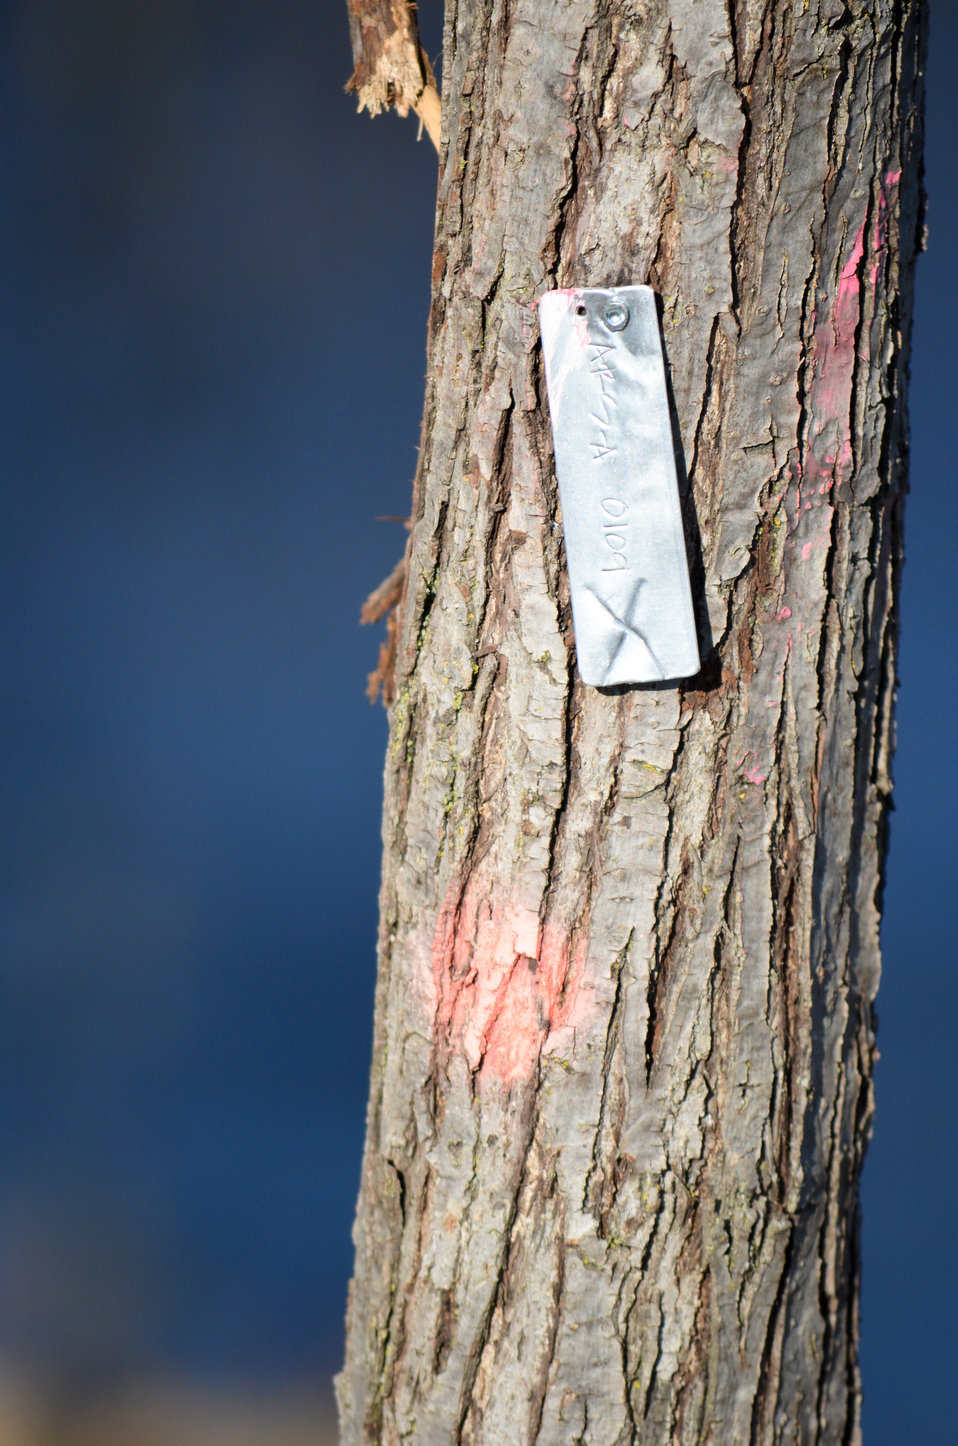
Tree marked during flood risk reduction survey

A survey marker, placed by the U.S. Army Corps of Engineers Sacramento District, designates an inventoried tree along the American River near Watt Avenue in Sacramento, Calif., Jan. 4, 2012. Trees identified in the survey were marked or tagged to signify that they were included in the inventory. GPS coordinates were recorded for each item identified, allowing engineers to eventually create virtual models of the levees. The study is part of the district’s American River Common Features project, a partnership with the Central Valley Flood Protection Board and the Sacramento Area Flood Control Agency to improve levees and reduce flood risk for the city.